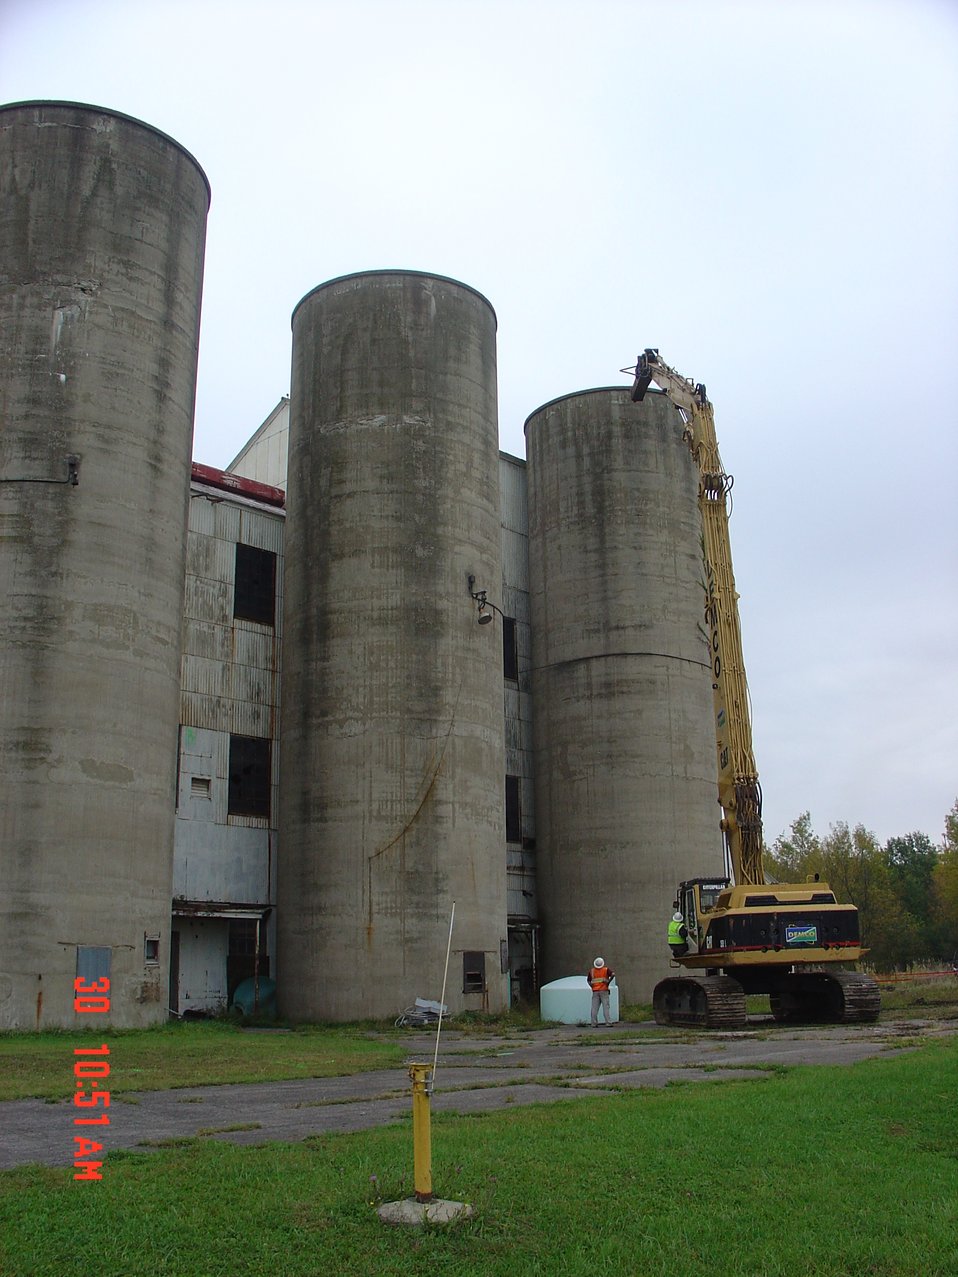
Building 401 silo demolition.
Activities from the Niagara Falls Storage Site, which is associated with the former Lake Ontario Ordnance Works. Formerly Utilized Sites Remedial Action Program (FUSRAP), a program initiated in 1974 to identify, investigate and clean up or control sites that were part of the Nation's early atomic energy and weapons program. Activities at the sites that are eligible for FUSRAP were conducted by Manhattan Engineer District (MED) or the Atomic Energy Commission (AEC), both predecessors of the Department of Energy (DOE). The U.S. Army Corps of Engineers was assigned management of FUSRAP by Congress in 1997.